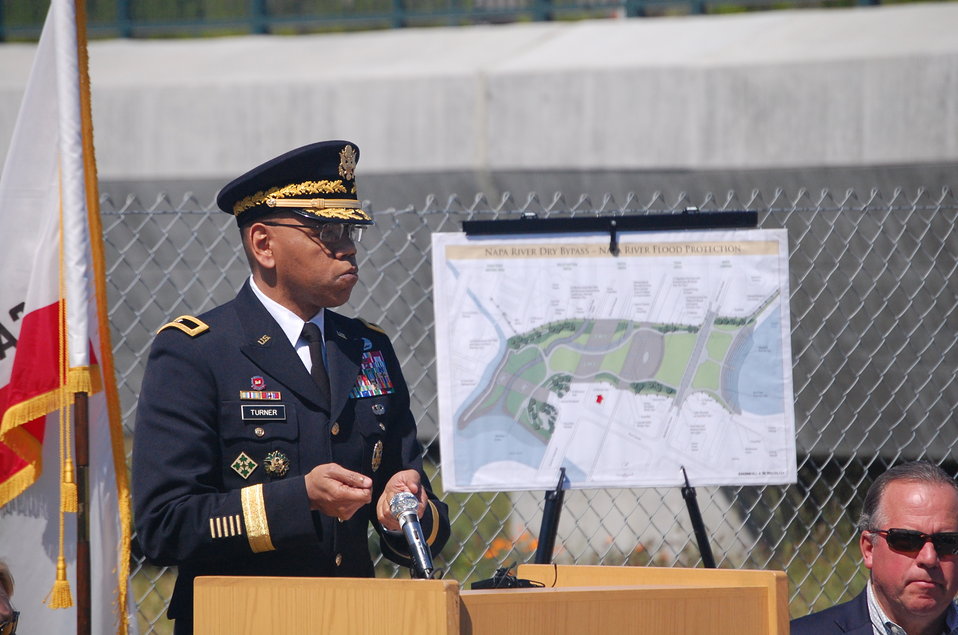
Corps joins Rep. Mike Thompson, Napa officials to break ground on new dry bypass

Brigadier Gen. David Turner, commander for the U.S. Army Corps of Engineers South Pacific Division, speaks during a ground breaking ceremony April 5, 2014, to celebrate the start of construction on a new dry bypass in Napa, Calif. The dry bypass will be an open channel that will allow water to avoid a bend in the Napa River that has historically backed up and overtopped the river banks. When complete in June 2015, the bypass is expected to be dry most of the year, but would provide flood risk reduction benefits during a two-year event, meaning there’d be a 50 percent chance in any given year that the bypass would be used.